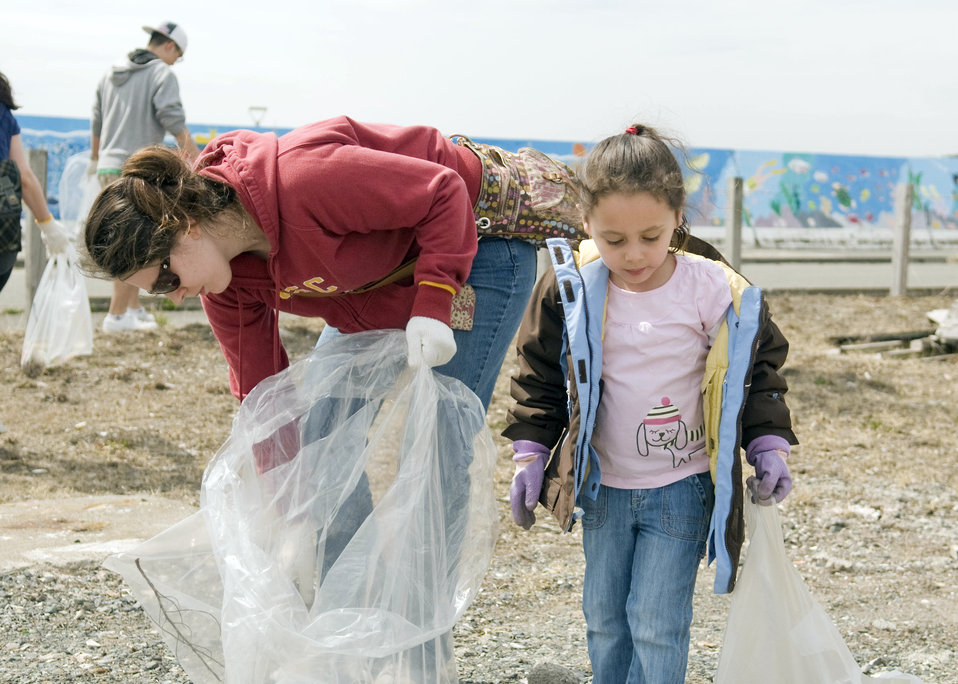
Misawa servicemembers, Japanese clean beach, port

Lisa Vargas and daughter, Jordys Vargas, 4, pick up trash near the Pacific Ocean coast at the 13th Annual Misawa beach and port clean up event April 10, 2010, at Misawa Air Base, Japan.